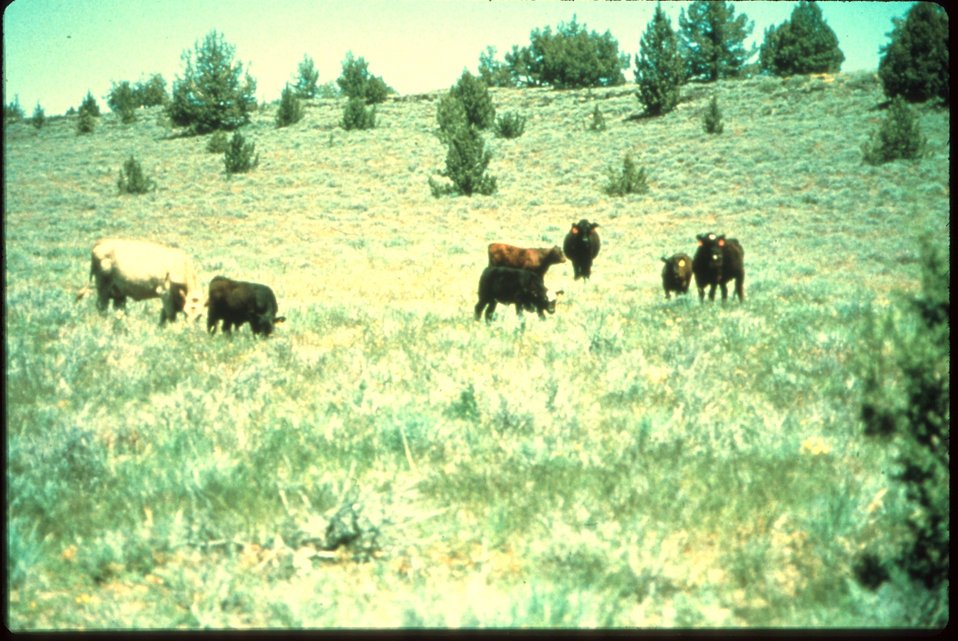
Loss of grazing (35-90%) in weed infested areas Idaho vegetation Plants in BLM